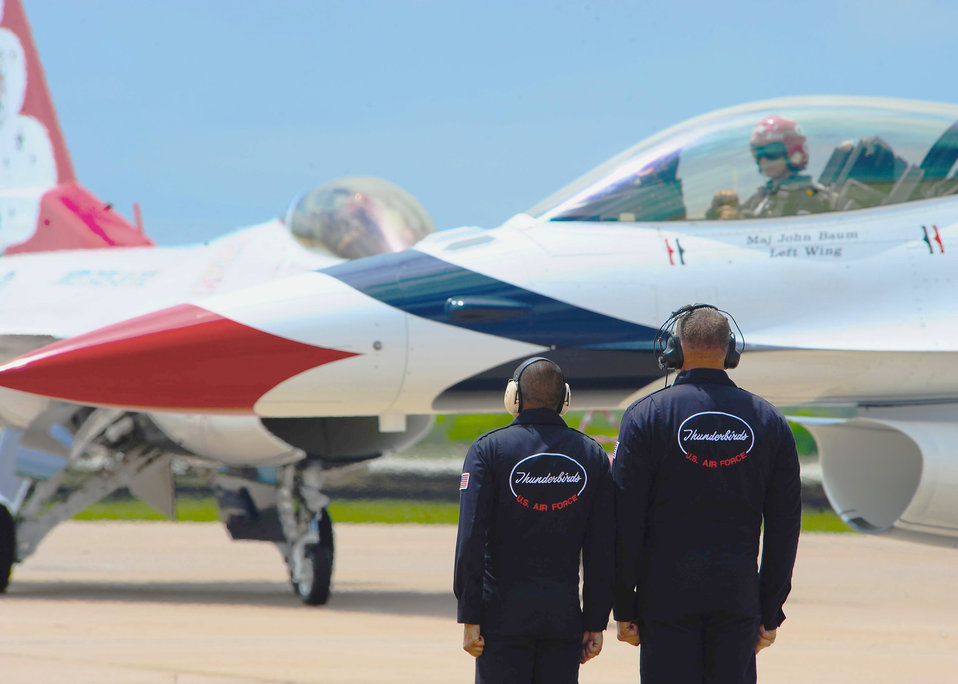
Thunderbirds at Dyess

Maj. John Baum prepares for take-off during the Dyess Big Country Air Fest May 1, 2010, at Dyess Air Force Base, Texas. Major Baum flies the left-wing position during the U.S. Air Force Thunderbirds performance.